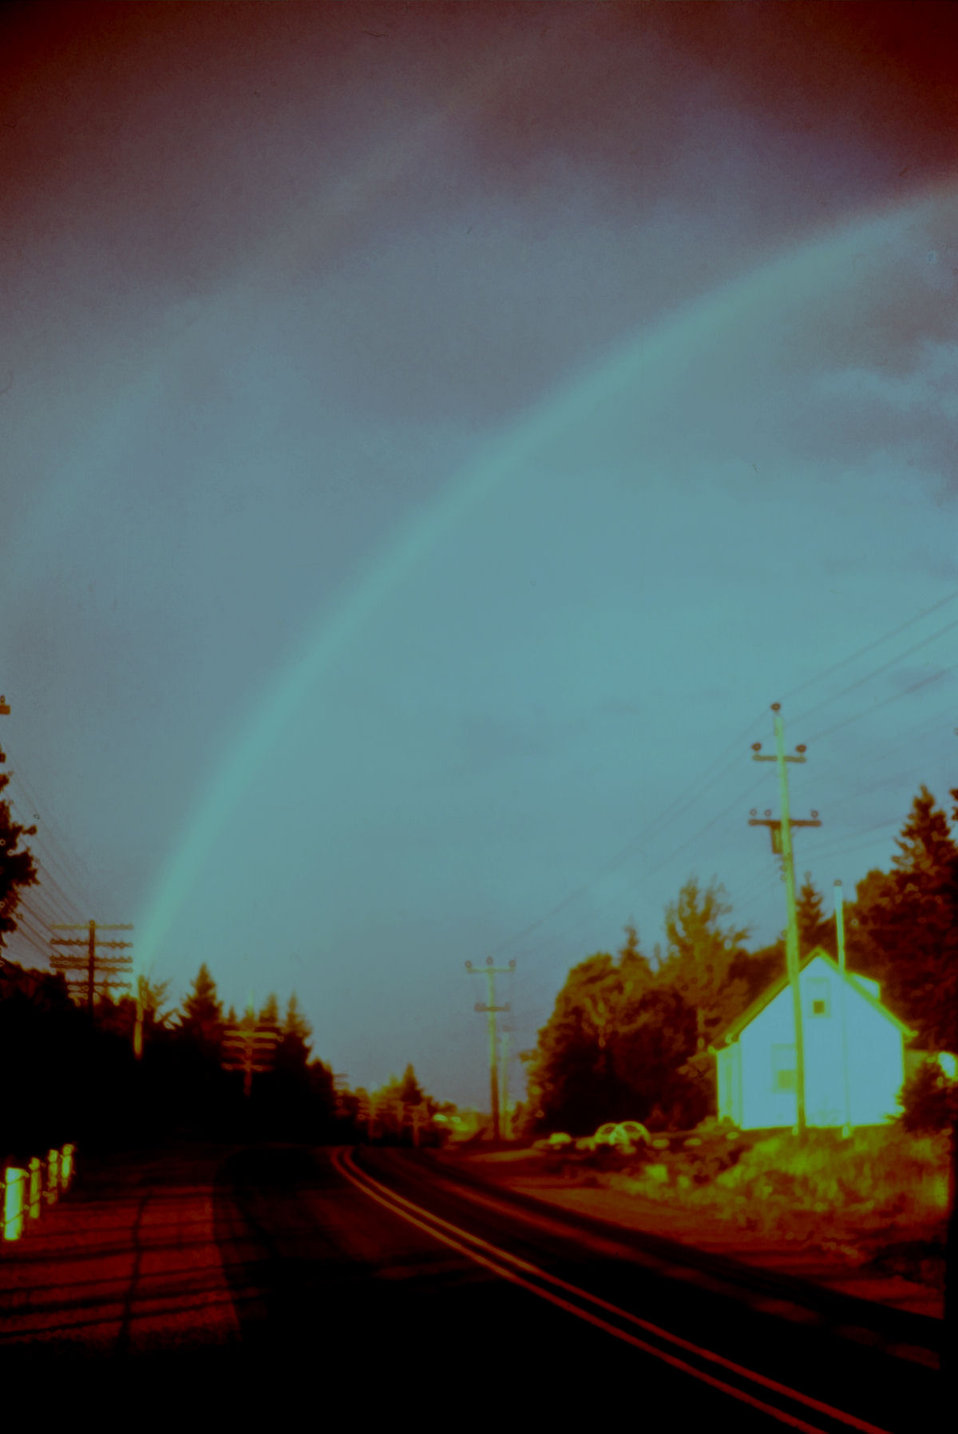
Rainbow